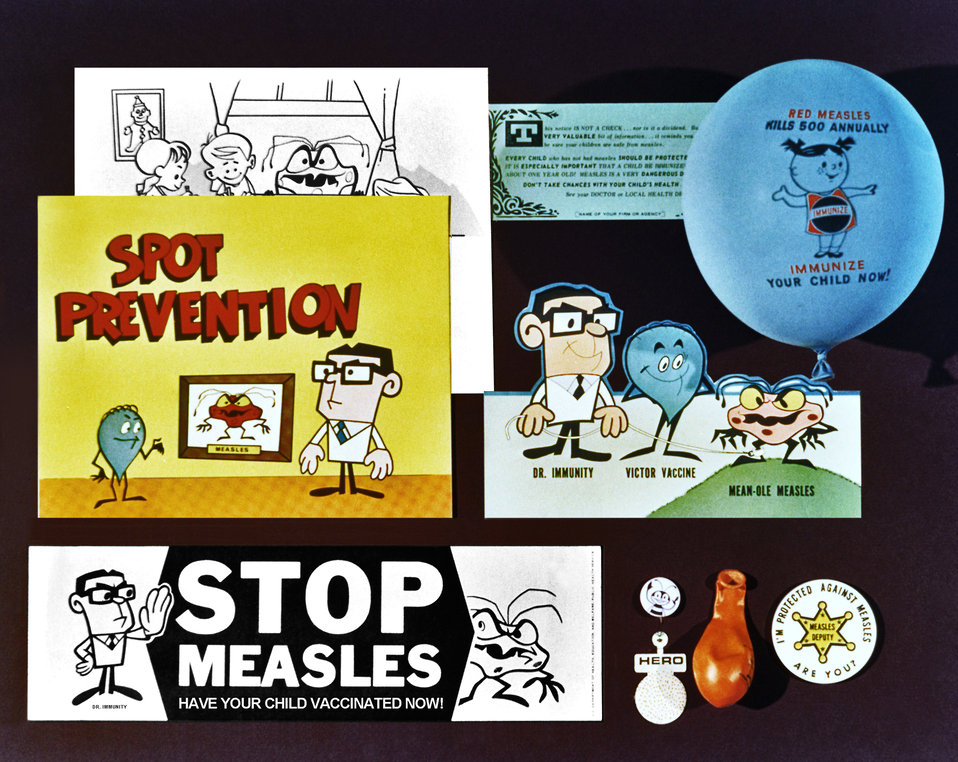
The health marketing materials seen in this photograph were used to promote measles vaccination participation in the U.S. during the 1960s.